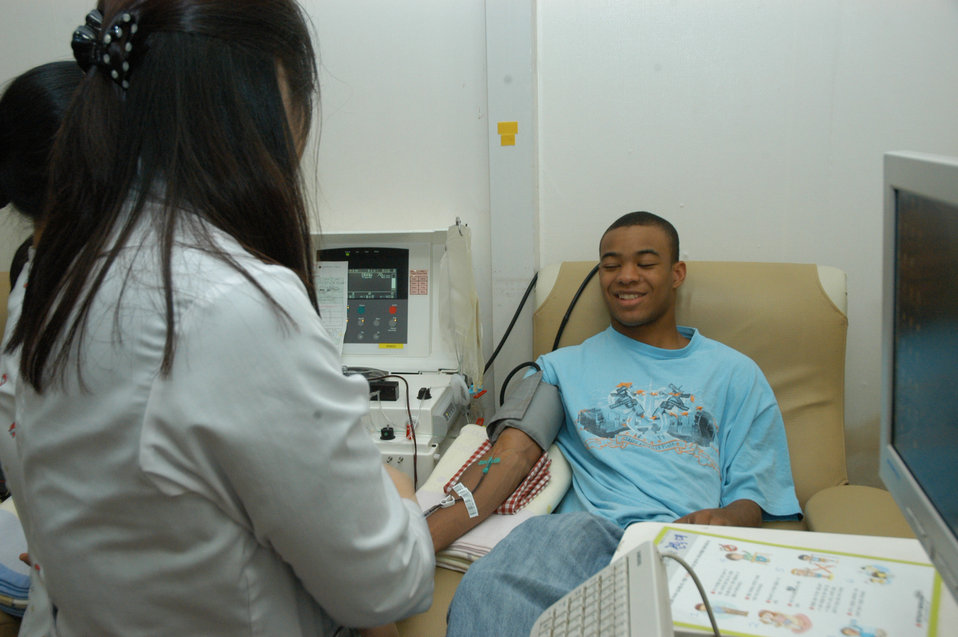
Airman, medical response save Korean leukemia patient

Airman Tamarias Pope has his blood drawn at the Chonbuk University Hospital, in Jeonju, Republic of Korea, Oct. 8. Airman Pope answered to call to help a 24-year-old Korean patient after receiving a base-wide e-mail. Airman Pope is assigned to the 8th Security Forces Squadron at Kunsan Air Base, Republic of Korea.